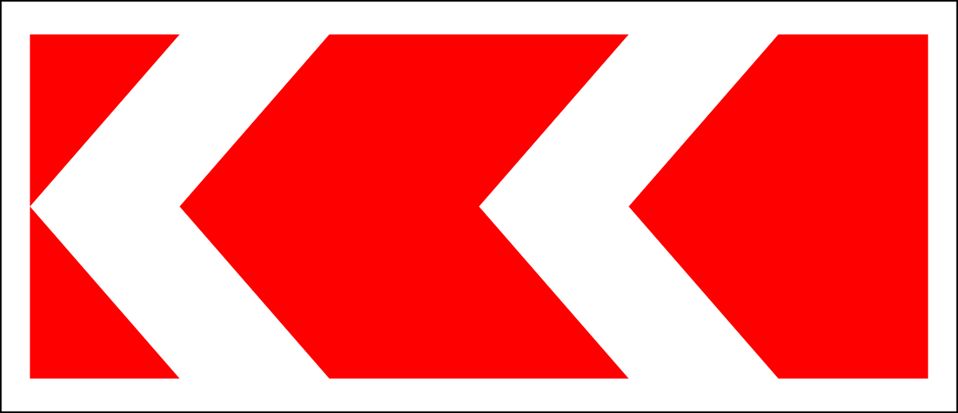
Русский: Дорожный знак 1.34.2 'Направление поворота' Road sign 1.34.2